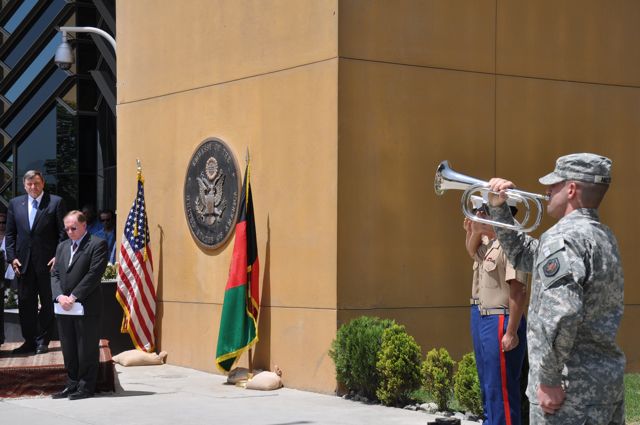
Memorial Day at US Embassy in Kabul